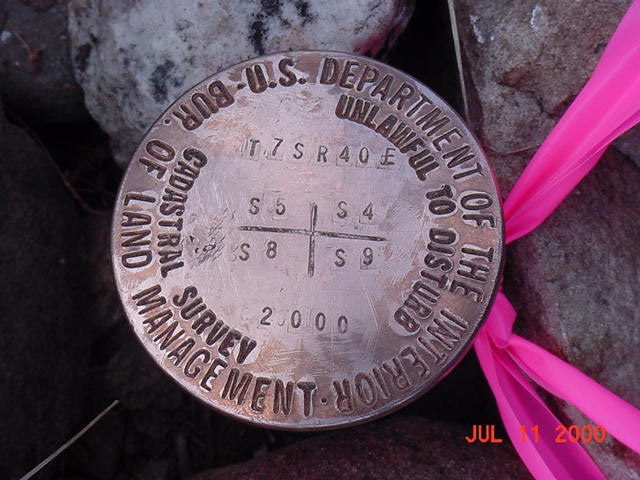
Cadastral Surveys Idaho Bureau of Land Management